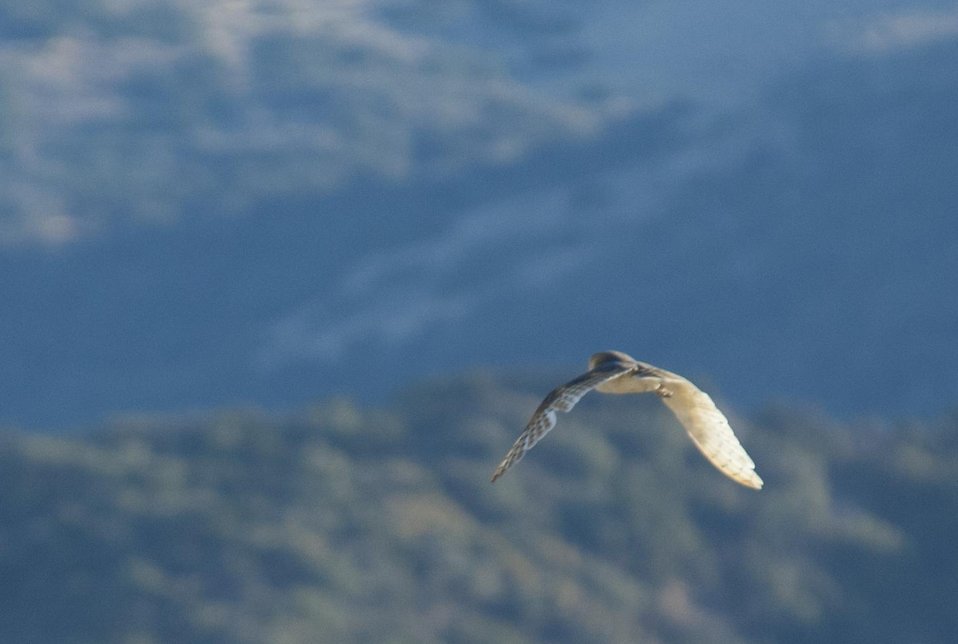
Barn Owl flying over Carrizo Plain